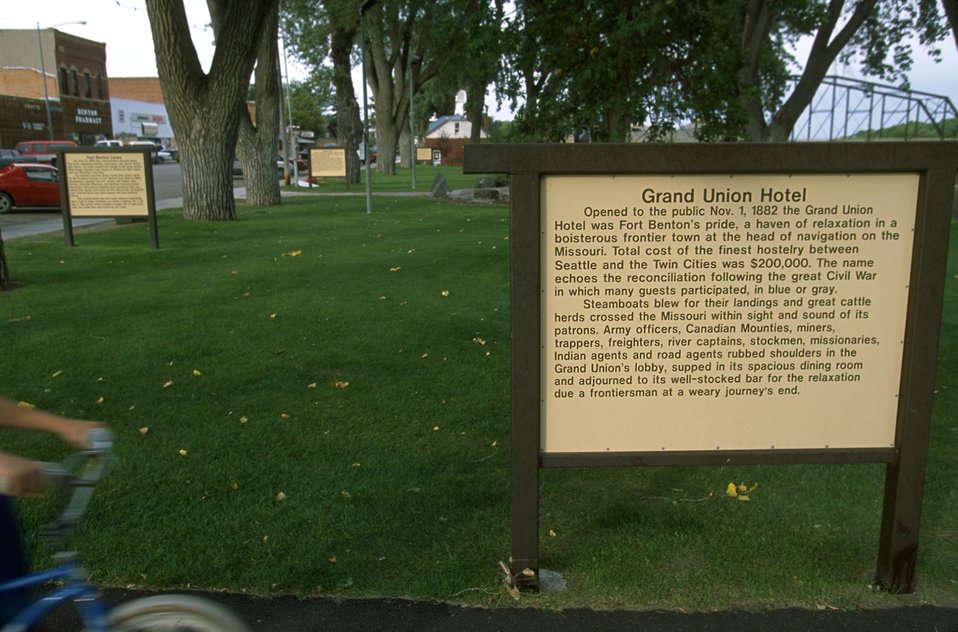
Levee at Fort Benton